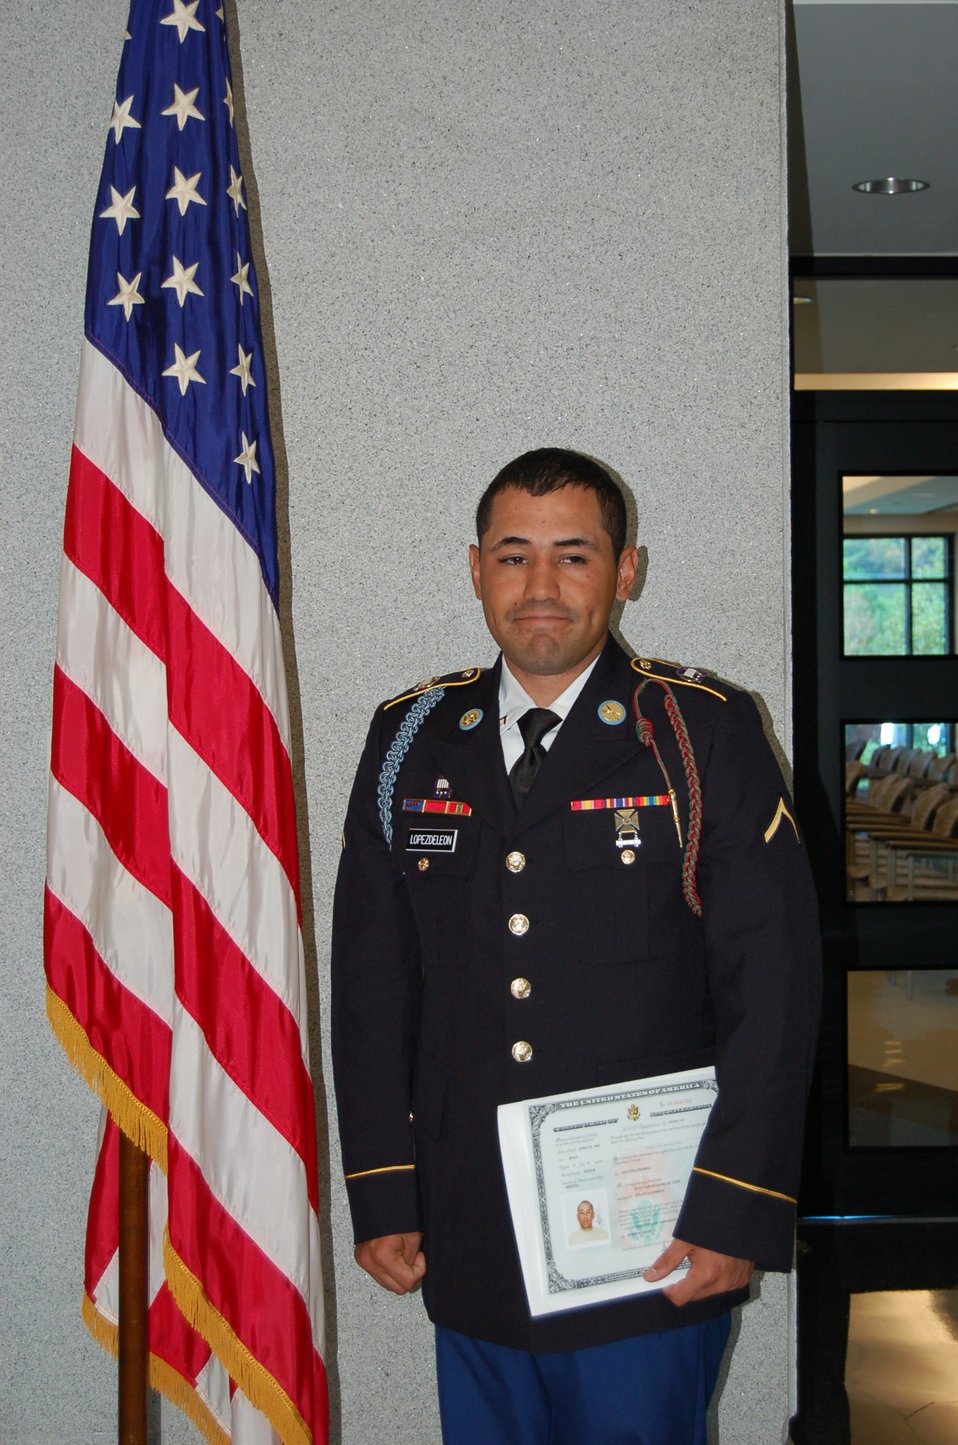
New Citizens